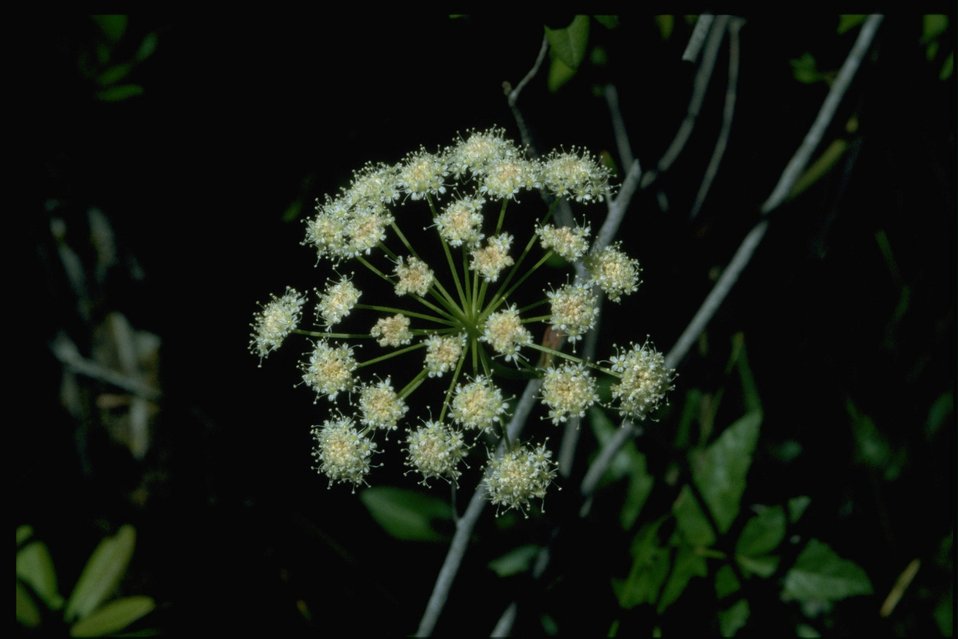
Closeup shot of Cicuta douglasii.